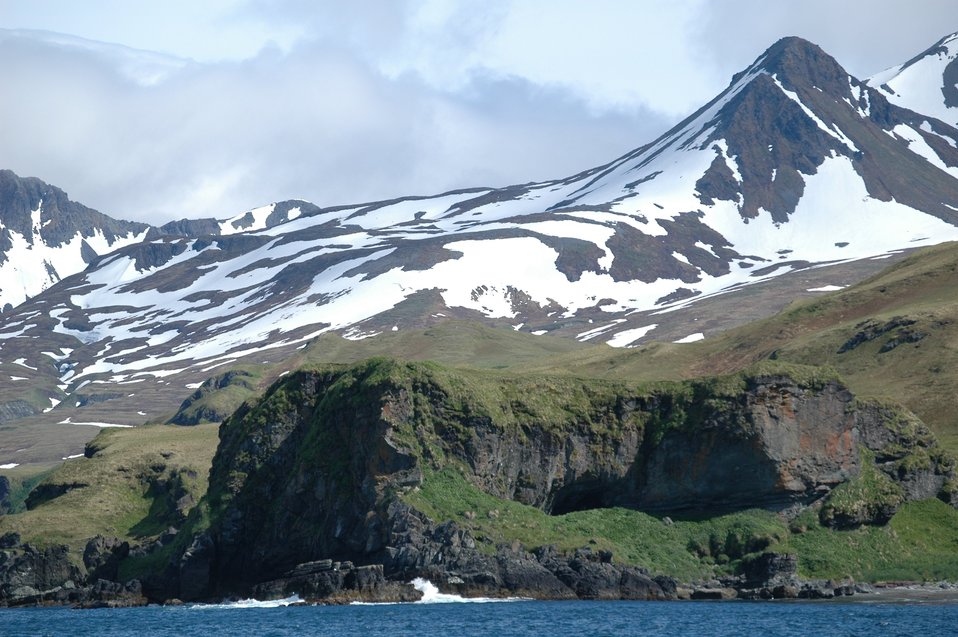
Clouds, mountains, and an ironbound coast